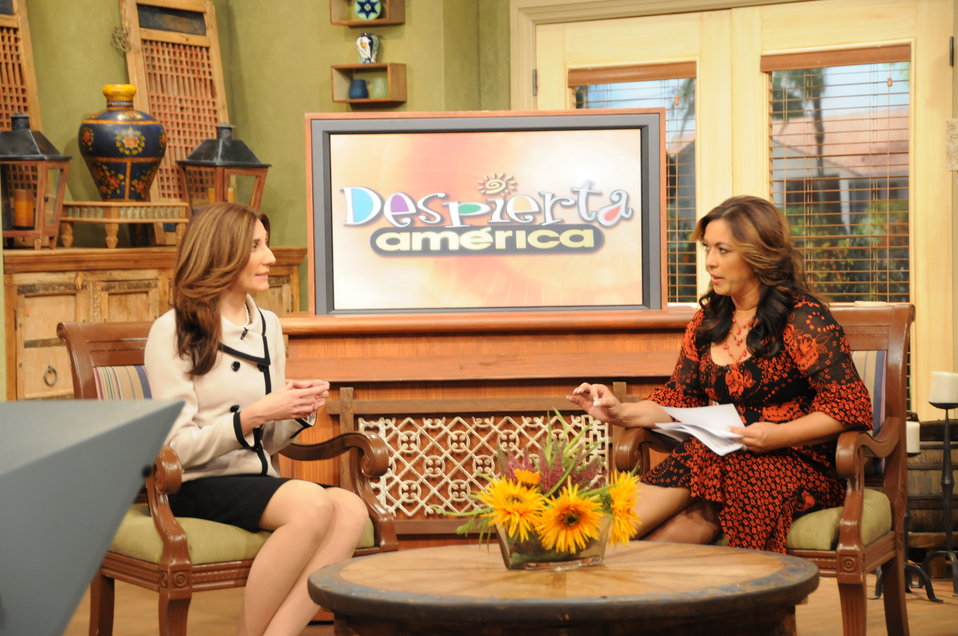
Deputy Administrator for SNAP Lisa Pino is interviewed on Univision’s national morning show, Despierta America.